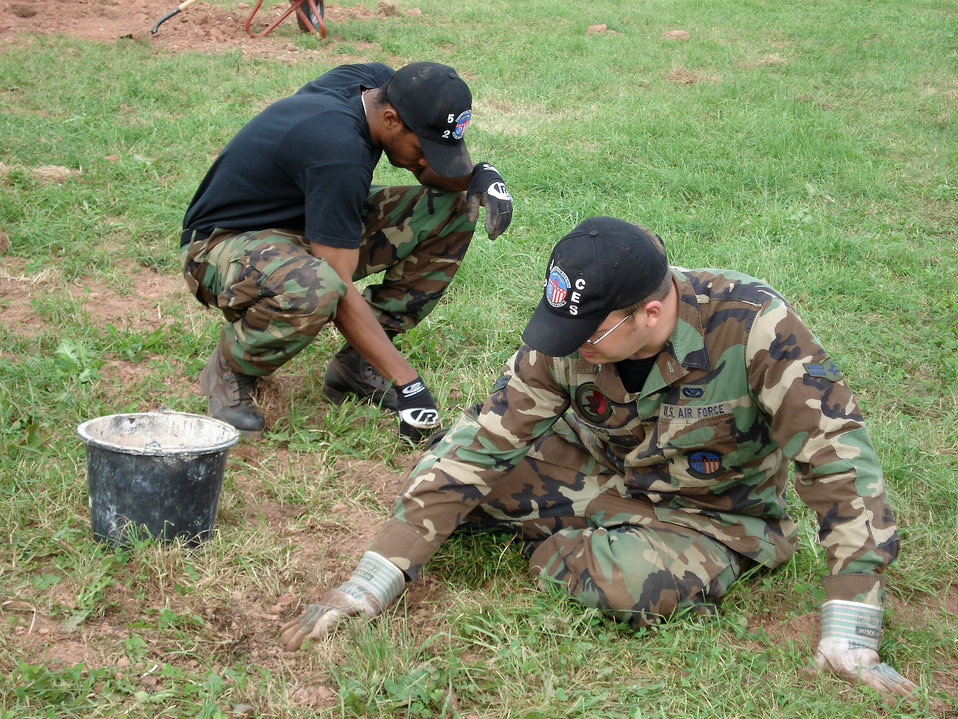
Investigation continues

Airmen 1st Class Dale Driggs and Darnell Starkes, 52nd Civil Engineer Squadron, augment Spangdahlem Air Base?s crash recover workers on the scene of an F-16 Fighting Falcon crash here. They are helping pick up parts of the aircraft that were strewn all over the field and prepare them for transport back to the base.